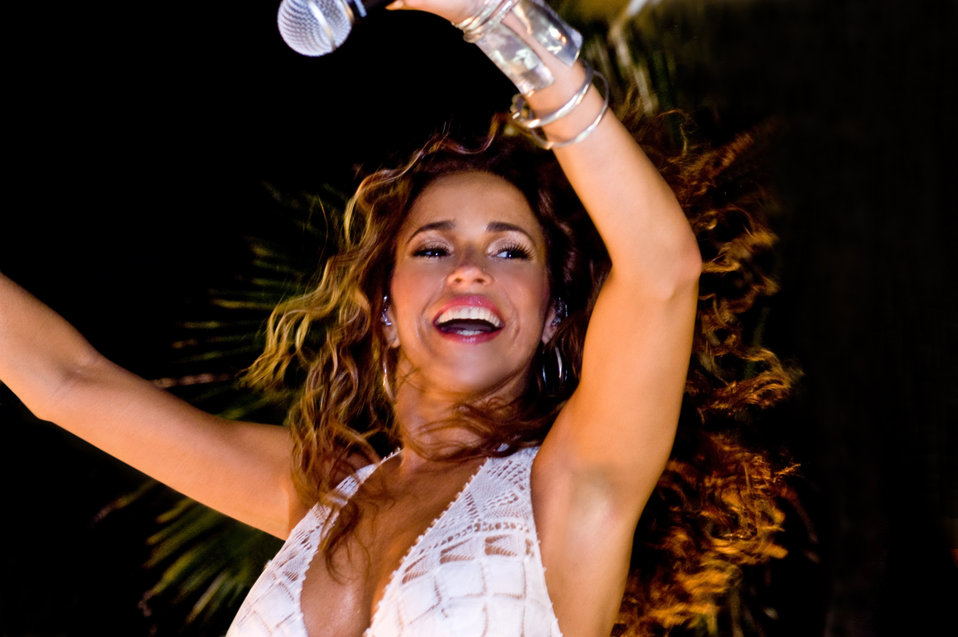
Daniela Mercury atop trio eletrico during carnaval in Salvador Bahia